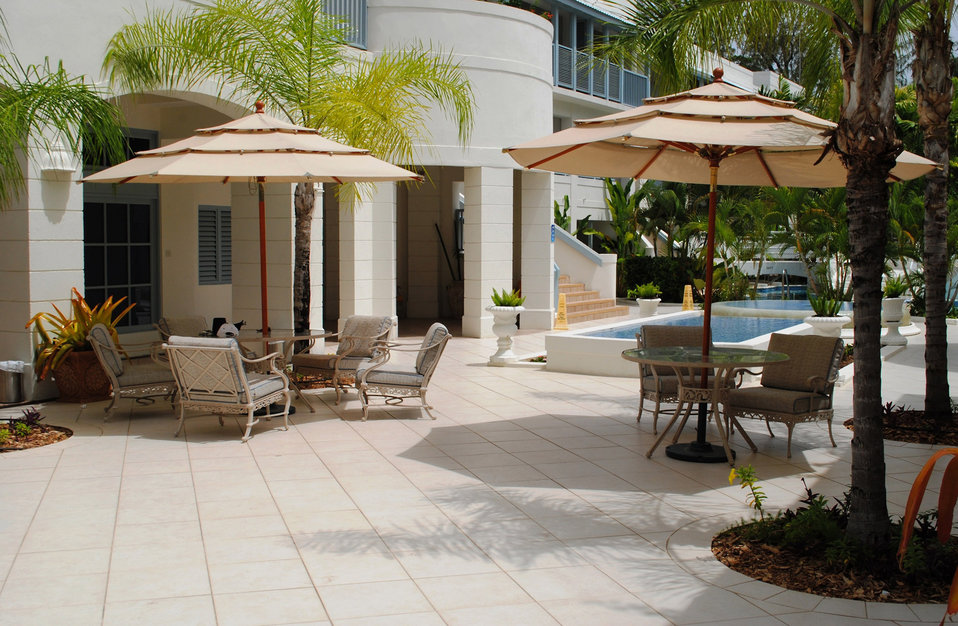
Hotel courtyard and seating

Courtyard and seating at a caribbean hotel.